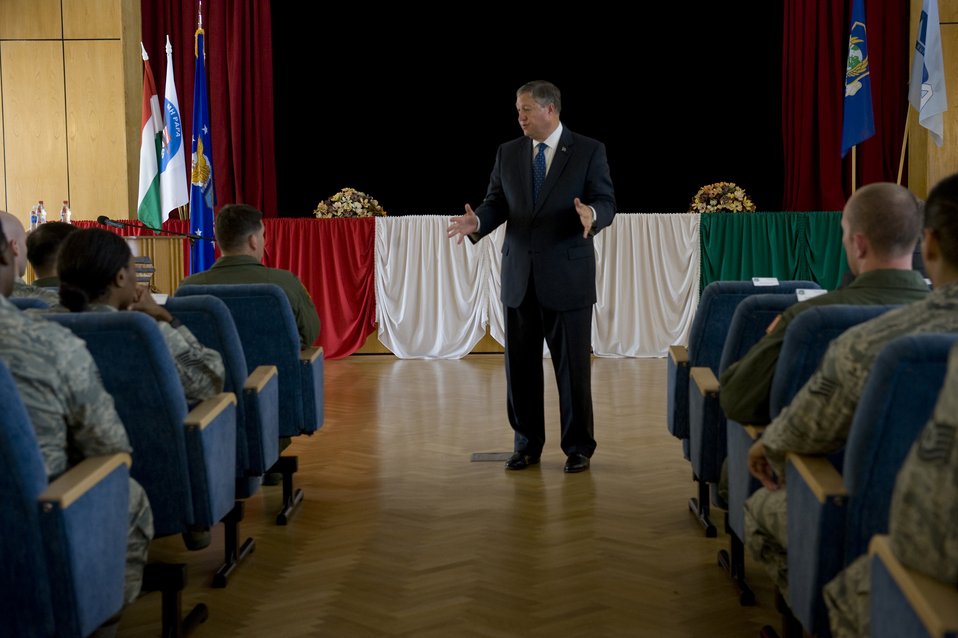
SecAF greets Airmen

Secretary of the Air Force Michael Donley addresses Airmen and their spouses during an